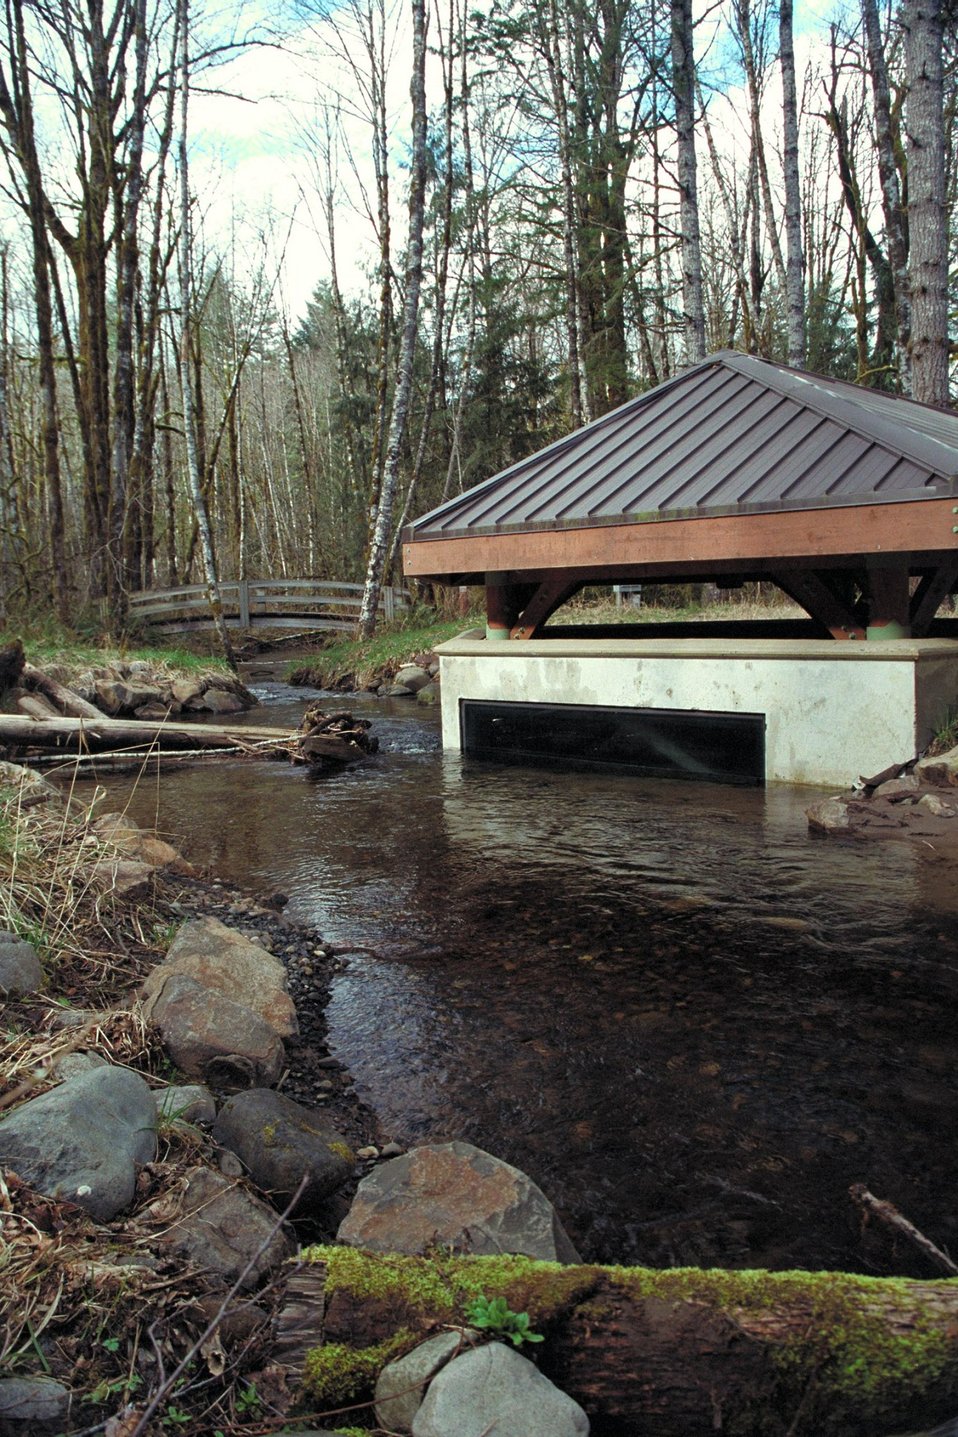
Cascade Stream Watch is an environmental education program conducted at BLM's Wildwood Recreation site.